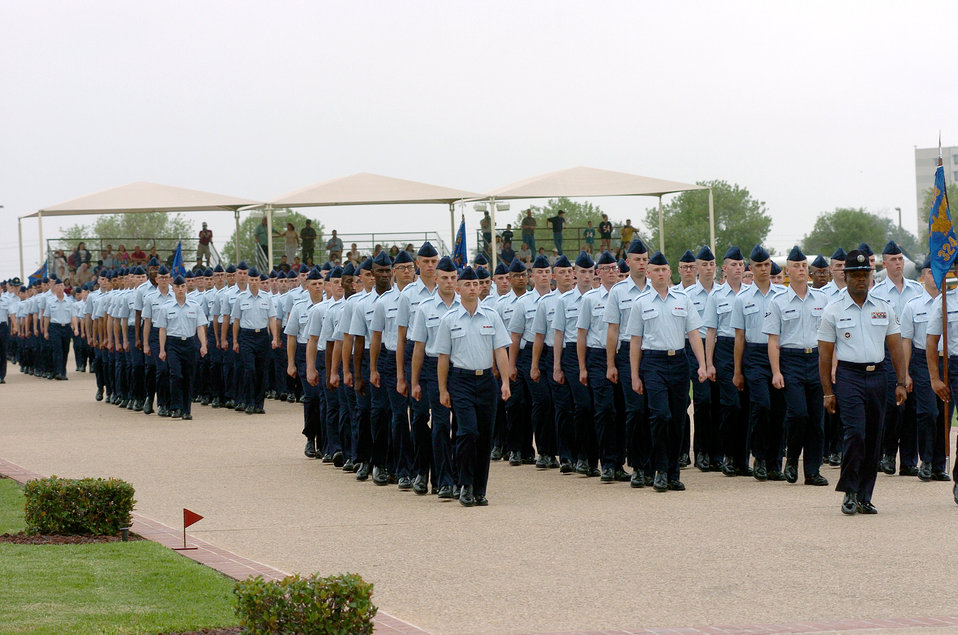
Graduation day

LACKLAND AIR FORCE BASE, Texas -- Airmen pass in review during Basic Military Training graduation Oct. 22. The ceremonies were attended by Secretary of the Air Force Dr. James G. Roche and Air Force Chief of Staff Gen. John P. Jumper.